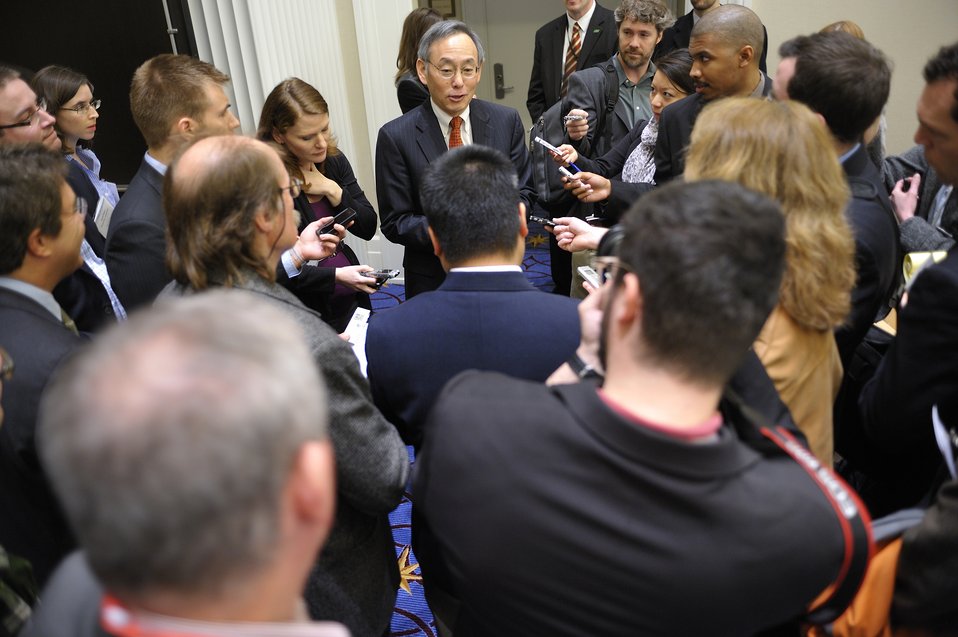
ARPA-E Energy Innovation Summit 2011, 21 of 83

Steven Chu, Secretary, United States Department of Energy holds an impromptu press avail after his Keynote.